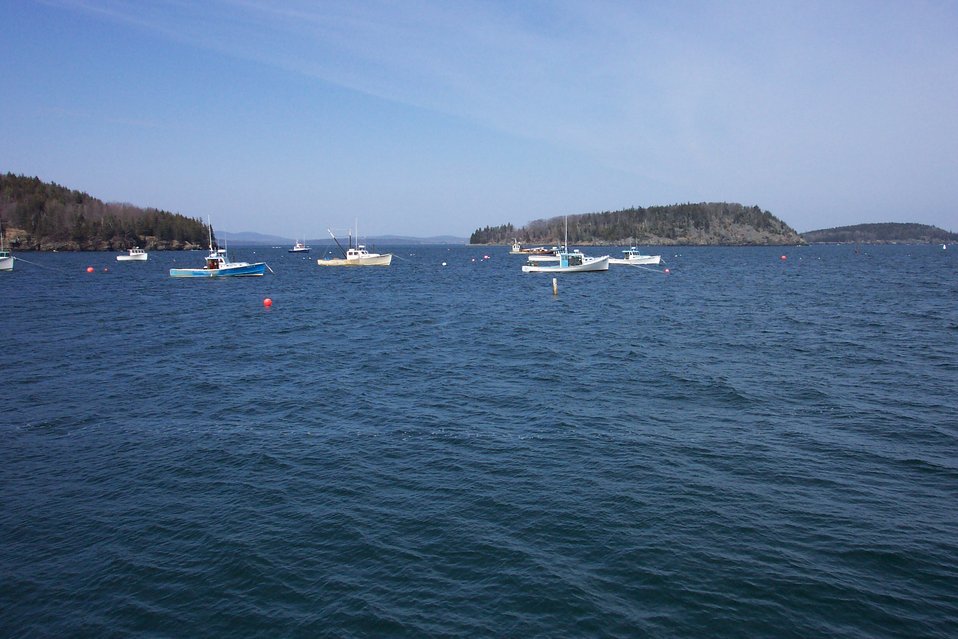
The harbor at Bar Harbor.